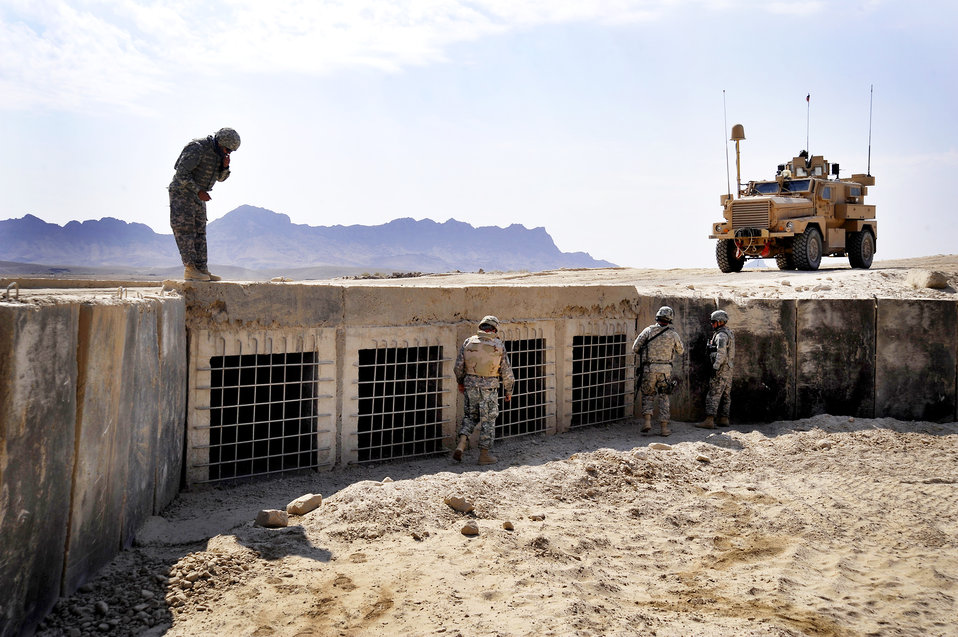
Air Force engineers help keep Afghan roads safe for travel

U.S. servicemembers from Provincial Reconstruction Team Zabul inspects a bridge for improvised explosive devices, damages or traces of tampering here Oct. 23, 2009, in Zabul Province, Afghanistan. The inspections increase safety for the people of Zabul as well as coalition forces while traveling.